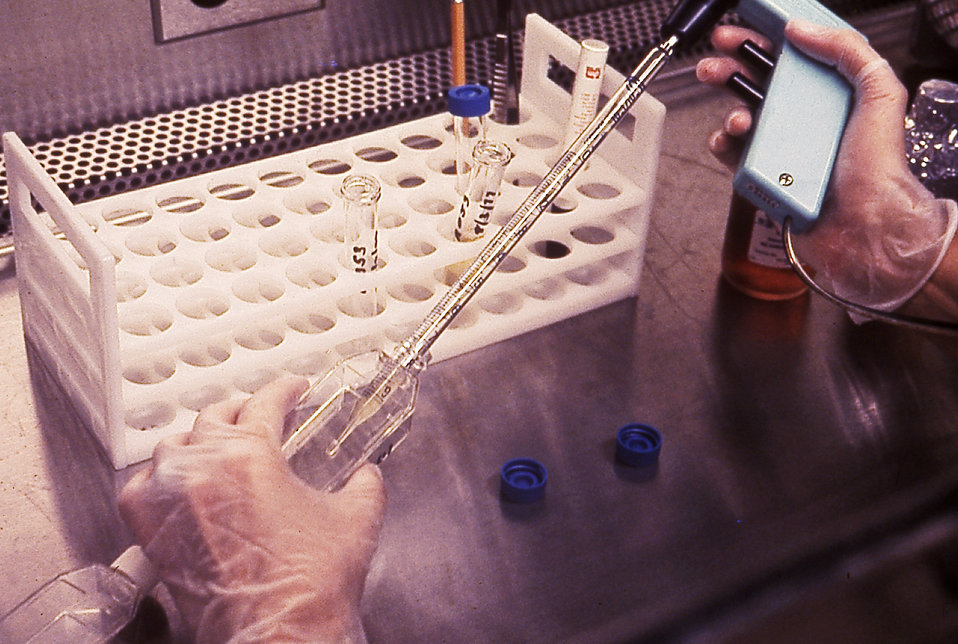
This laboratorian is shown placing a Falcon� Flask with amniotic fluid cells under a vertical laminar-flow hood.